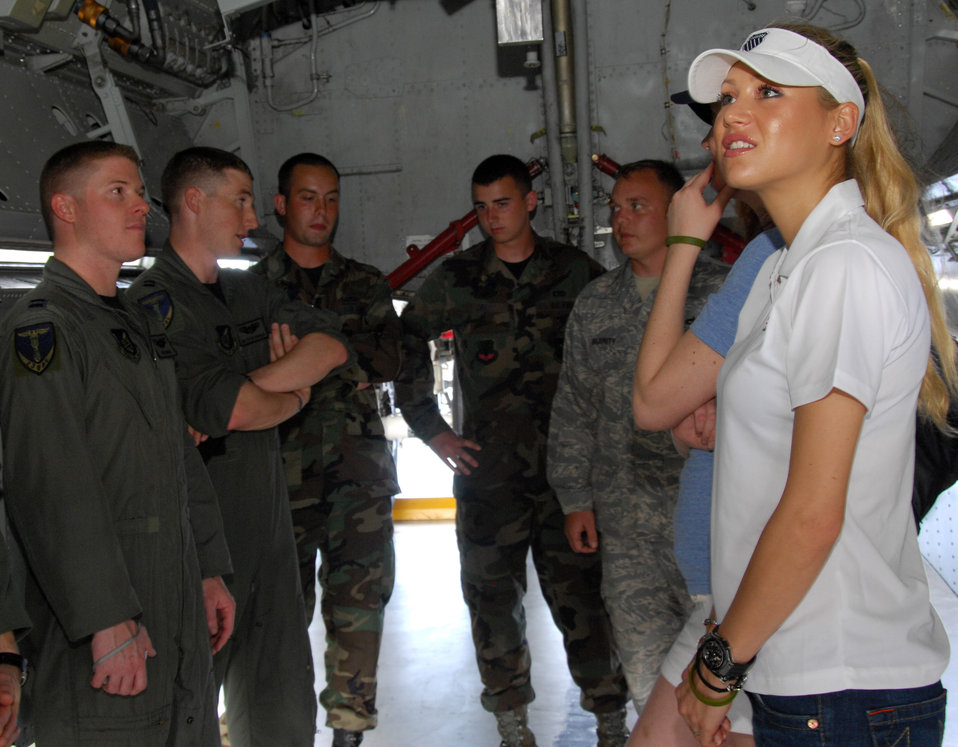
Anna Kournikova visits Andersen

Anna Kournikova tours a B-52 Stratofortress as members of the 23d Expeditionary Bomb Squadron explain the aircraft's capabilities Oct. 29 at Hangar 1 at Andersen Air Force Base, Guam. Members of the 23rd EBS are deployed to Guam from Minot AFB, N.D.